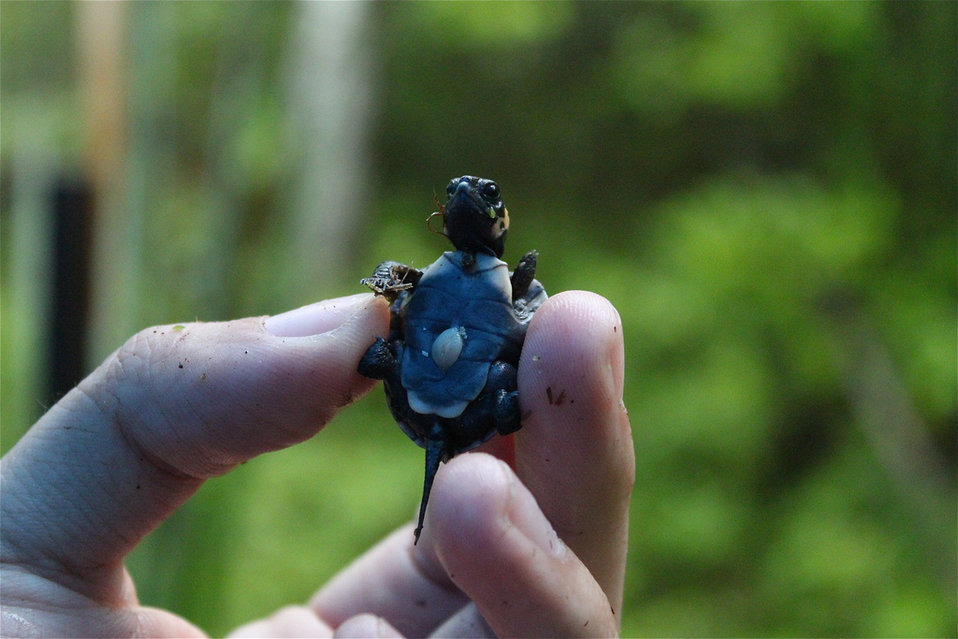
Baby bog turtle.